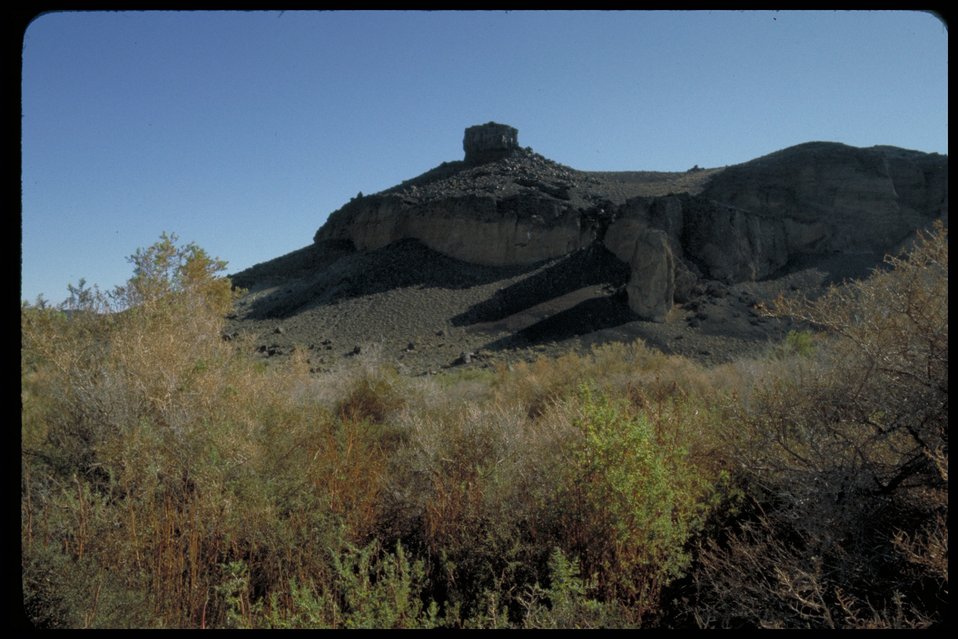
Oregon Trail at Castle Butte Lower Snake River District